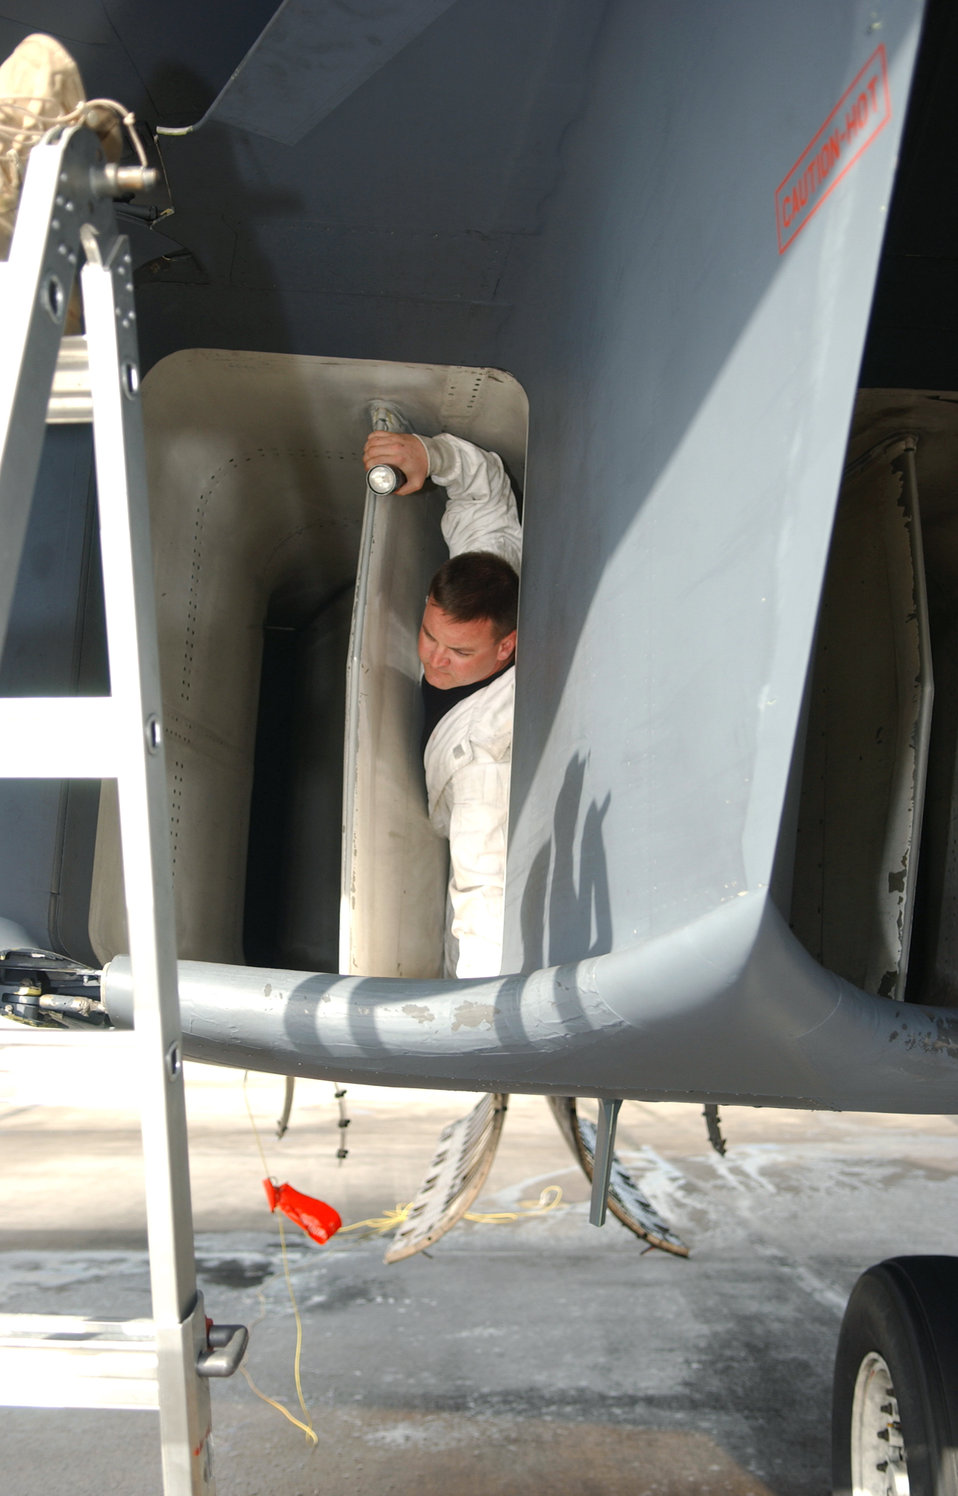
Operation ENDURING FREEDOM

Staff Sgt. Dan Cowart, 40th Expeditionary Maintenance Squadron, exits a B1-B Lancer engine after performing a post-flight inlet inspection.